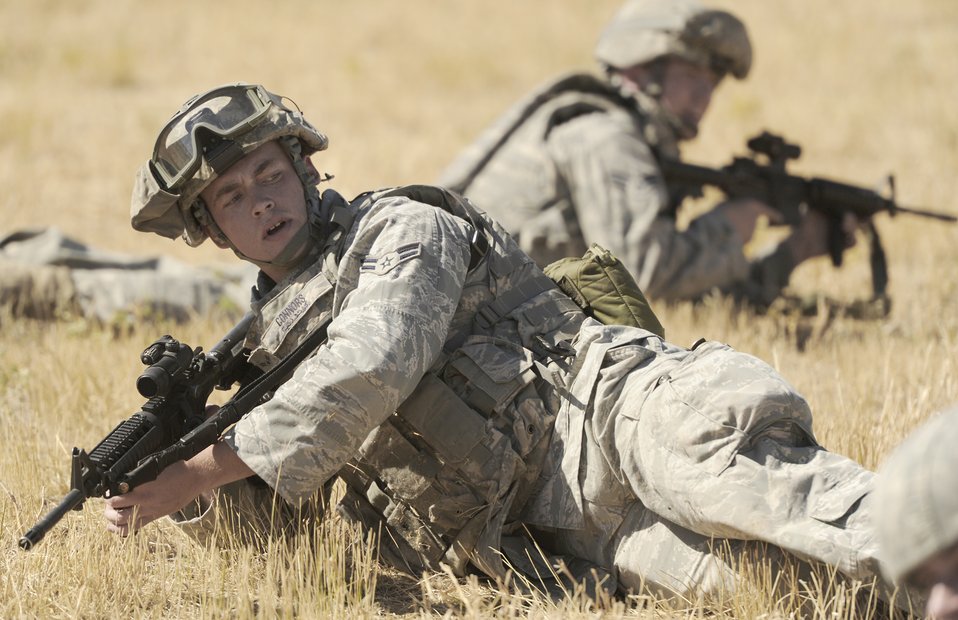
Combat Readiness Training

Airman 1st Class David Connors participates in tactical movement drills during the 75th Security Forces Combat Readiness Training course Sept. 22, 2010, at Hill Air Force Base, Utah. The course teaches Airmen basic tactical movements, land navigation and self aid buddy care.